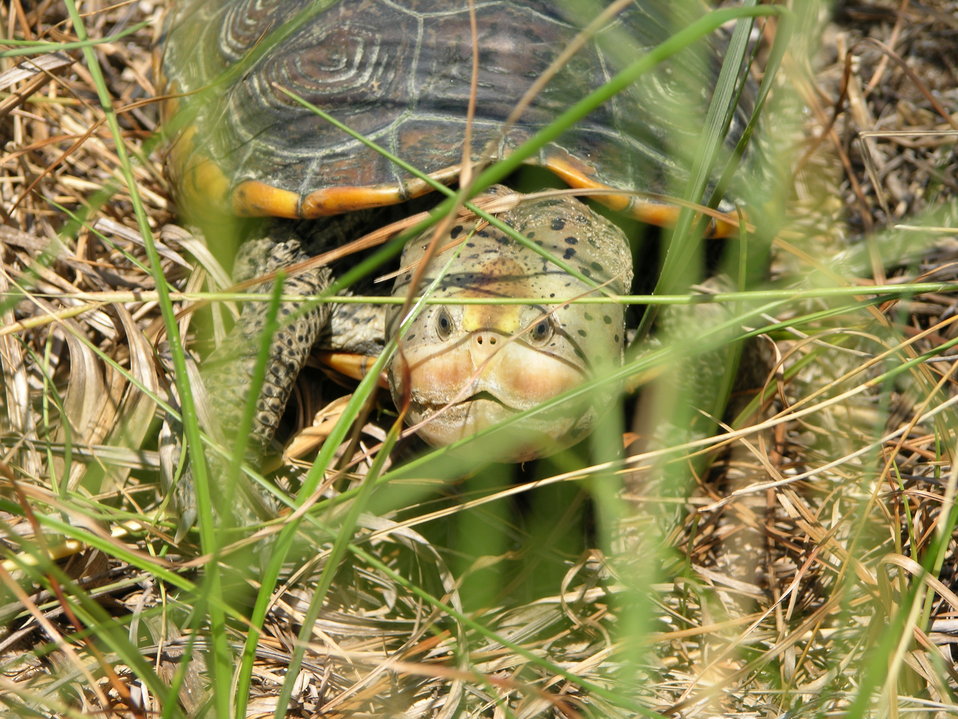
Diamondback terrapin turtle

The Grand Bay National Estuarine Research Reserve is researching the diamondback terrapin turtle, whose habitat is likely to be inundated as the sea rises.